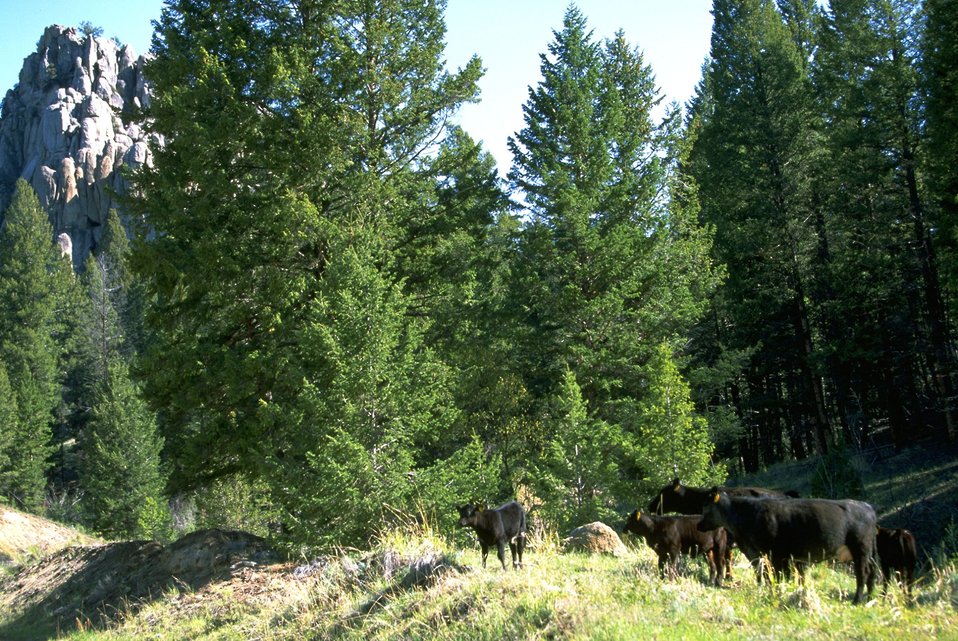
Black cows grazing below a rock formation and trees